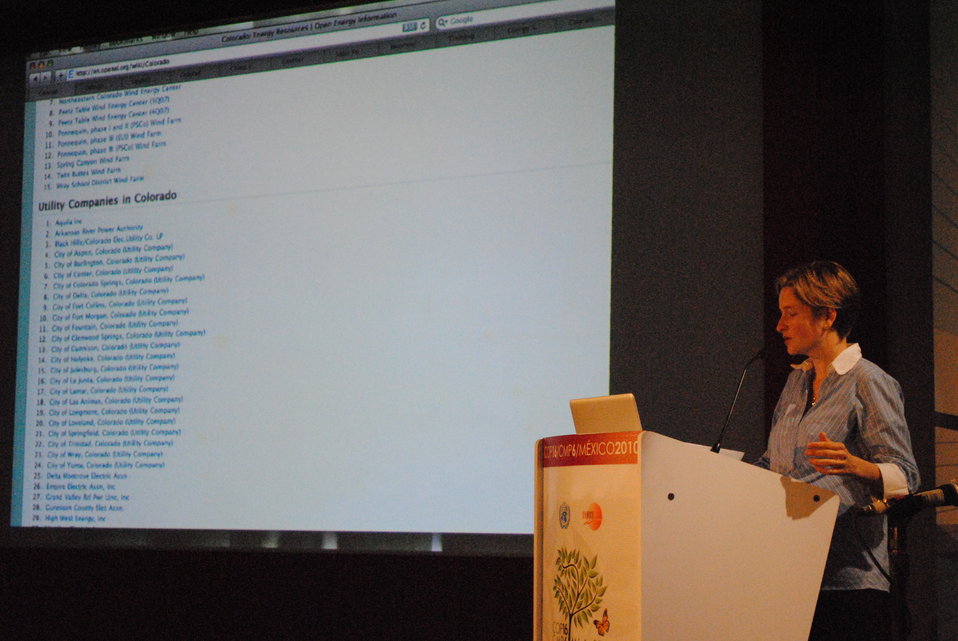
Jacqueline Cochran Showcases the Open Energy Information (OpenEI) Platform

Jacqueline Cochran of the National Renewable Energy Lab demonstrates how the U.S. government's Open Energy Information (OpenEI) platform, a side event at the U.S. Center at COP-16 in Cancun, Mexico, on December 1, 2010.